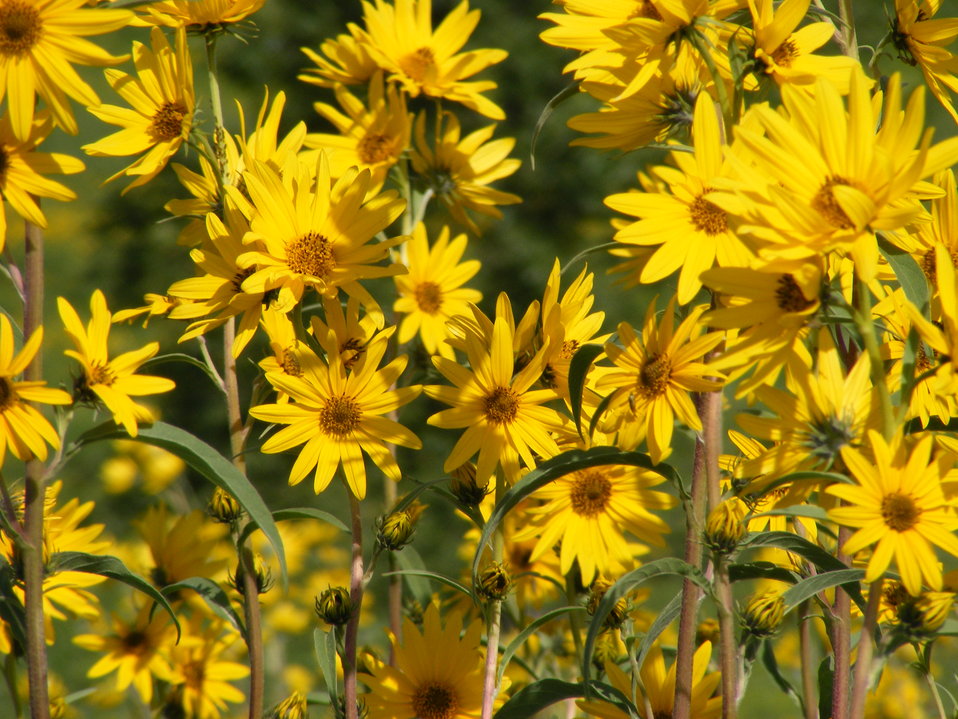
Suncatchers

A patch of Maxilmilian sunflowers (Helianthus maximilianii) glows in the tallgrass prairie at Waubay National Wildlife Refuge in South Dakota.

Credit: Laura Hubers / USFWS

Photo Contest Entry #159